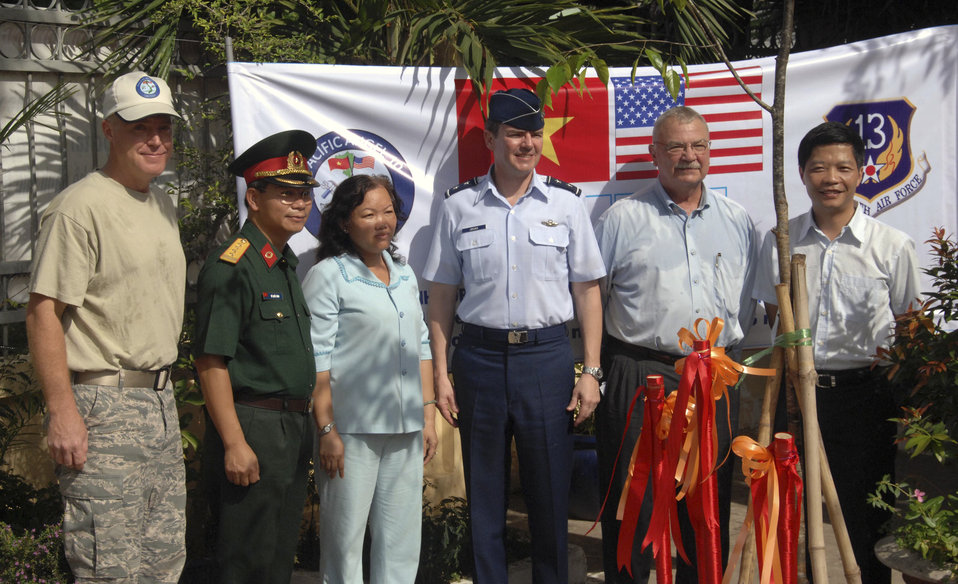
Operation Pacific Angel concludes

Lt. Col Blair English (left), Vietnamese Col. Van Tham , Maj. Gen. Jan-Marc Jouas and other senior Vietnam and U.S. leaders conclude the Pacific Angel 2010 mission in during a ceremony May 17, 2010, in Vietnam. Colonel English is the U.S. mission commander for Pacific Angel 2010, Colonel Tham is from Vietnam Military Region 9 and General Jouas is the U.S. Pacific Air Forces director of Operations, Plans, Requirements and Programs.